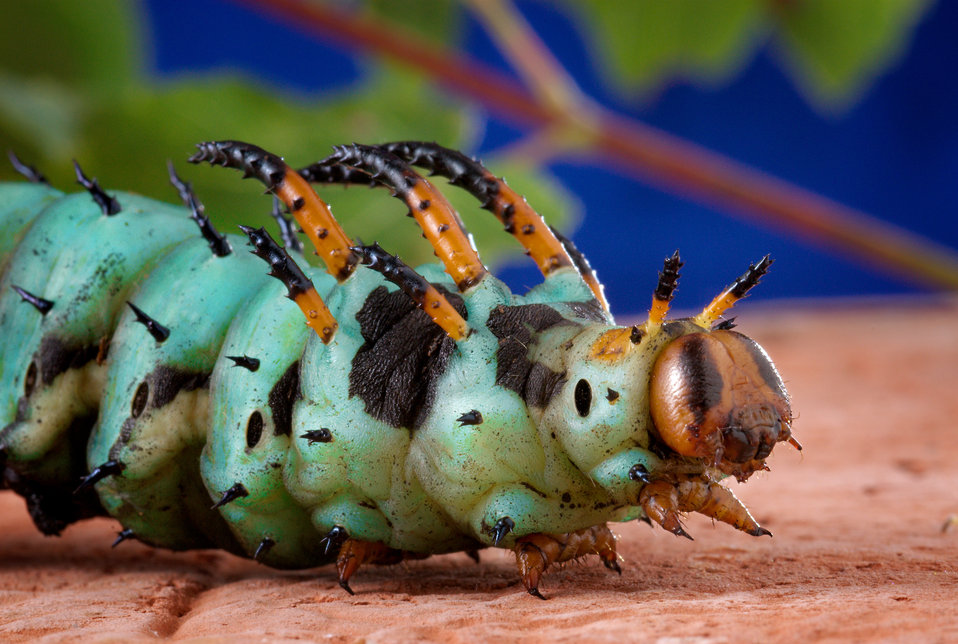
This 2008 image depicts a right lateral view of a Hickory Horned Devil caterpillar's head region. It's hard to imagine, but keep in mind that this caterpillar is actually a developmental stage, or 'instar', through which the creature passes before becoming an adult, or 'imago' Regal Moth, Citheronia regalis. Just prior to entering its pupal stage, where it will metamorphose into the adult moth, the caterpillar will change its appearance, adopting more of a turquoise coloration, which looked to be the case in the specimen photographed here.